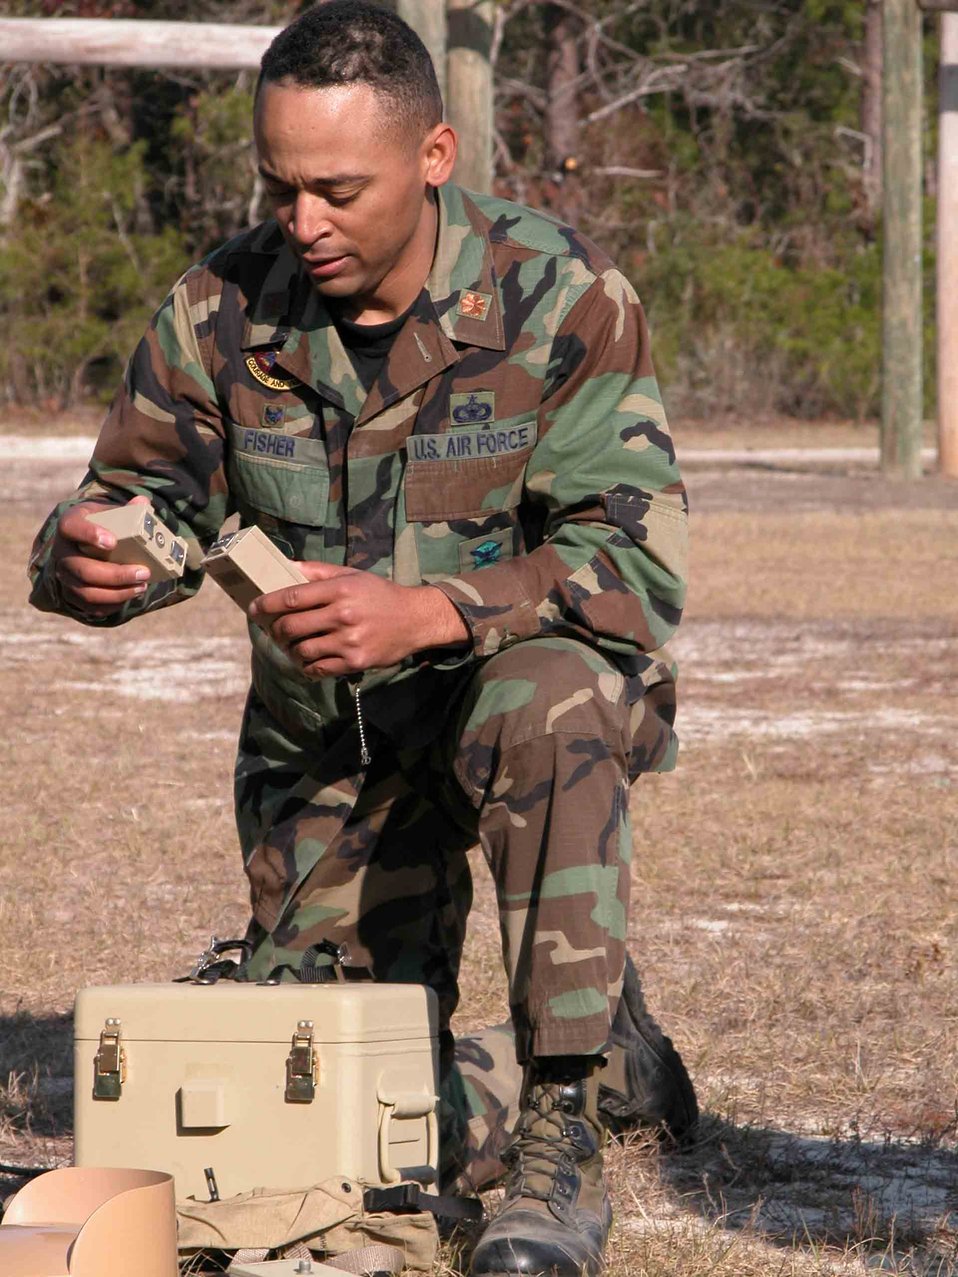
Preparing to deploy

EGLIN AIR FORCE BASE, Fla. -- Maj. Vincent Fisher tries to catch his breath while he helps his team assemble a sensor during an obstacle course challenge at Brave Defender combat training here recently. He is the 95th Security Forces Squadron commander from Edwards Air Force Base, Calif.